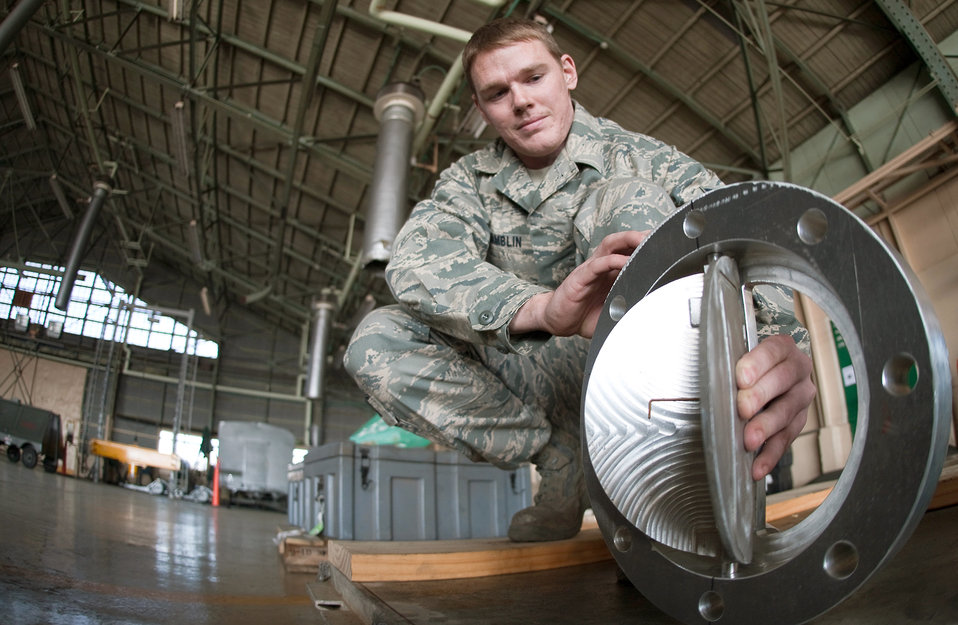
Yokota Airmen help cool power plant

Airman 1st Class Jeremy Hamblin delivers a component for a water pump March 27, 2011, at Yokota Air Base, Japan. Two teams of four Airmen on 12-hour shifts designed and created the necessary adapters, pressure valves and other pieces so Japanese crews could use the pumps to augment the plant's cooling system. The pumps will be used to transport fresh water into the plant instead of ocean water, which leaves corroding salt residue when it evaporates. Hamblin is assigned to the 374th Maintenance Squadron.